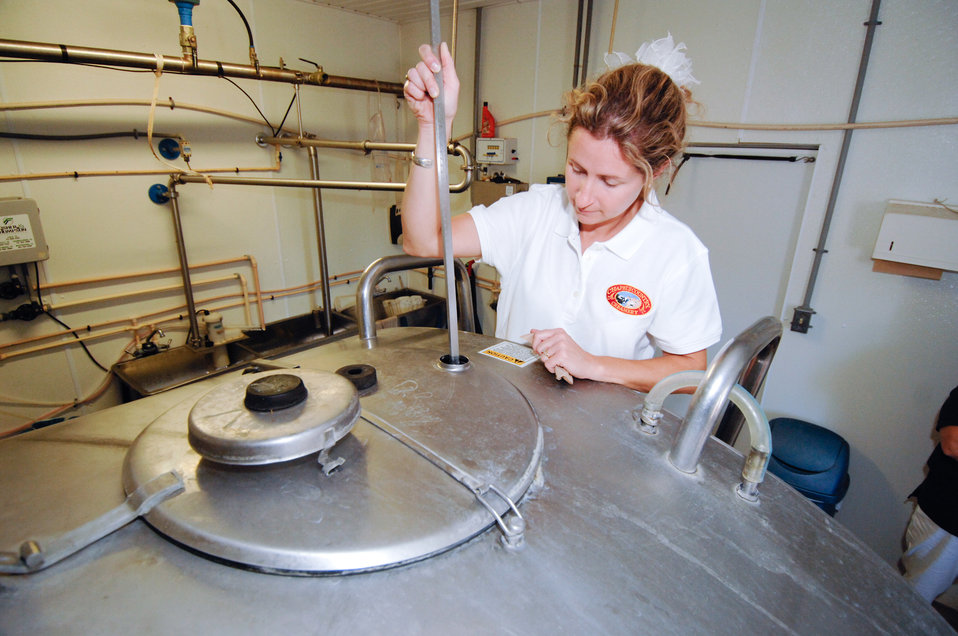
A Chapel’s Country Creamery employee in Easton, MD, measures the milk in a farm bulk tank on October 9, 2008. Milk weight is measured with a stick that is dipped into the tank so that it hits the bottom. The line between wet and dry is observed and a calibration chart is used to convert the stick reading into pounds of milk in the tank. The tanks are calibrated by a state department of agriculture weights and measures division or by the U.S. Department of Agriculture (USDA) Agriculture Marketing Service (AMS) Milk Market Administrator’s office.